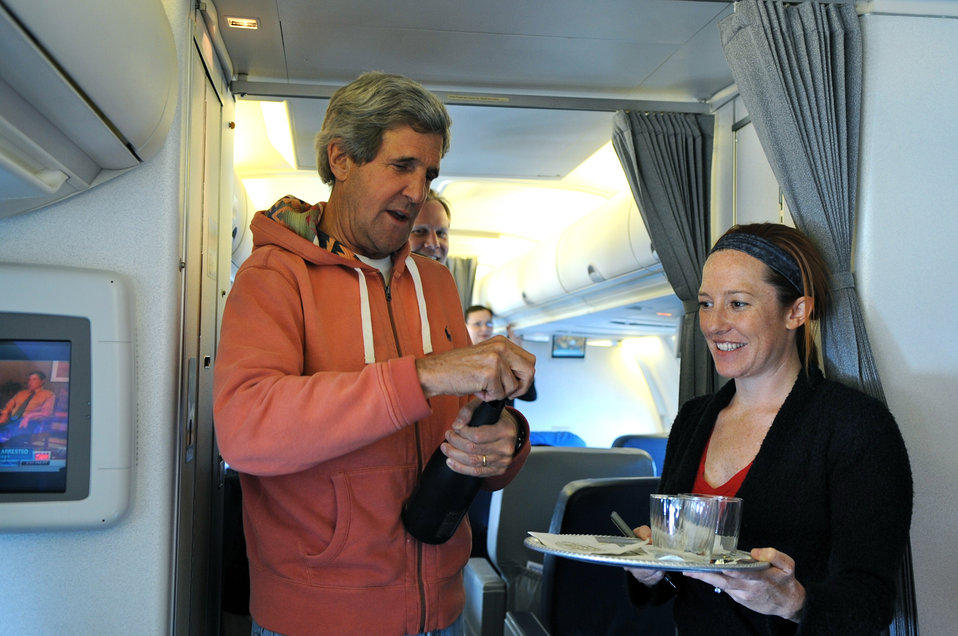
Secretary Kerry Celebrates First Briefing by Spokesperson Psaki En Route to Stockholm, Sweden

U.S. Secretary of State John Kerry uncorks a bottle of champagne en route from Andrews Air Force Base to Stockholm, Sweden as he celebrates the first press briefing at the U.S. Department of State Department by his new Spokesperson, Jen Psaki, on May 13, 2013.